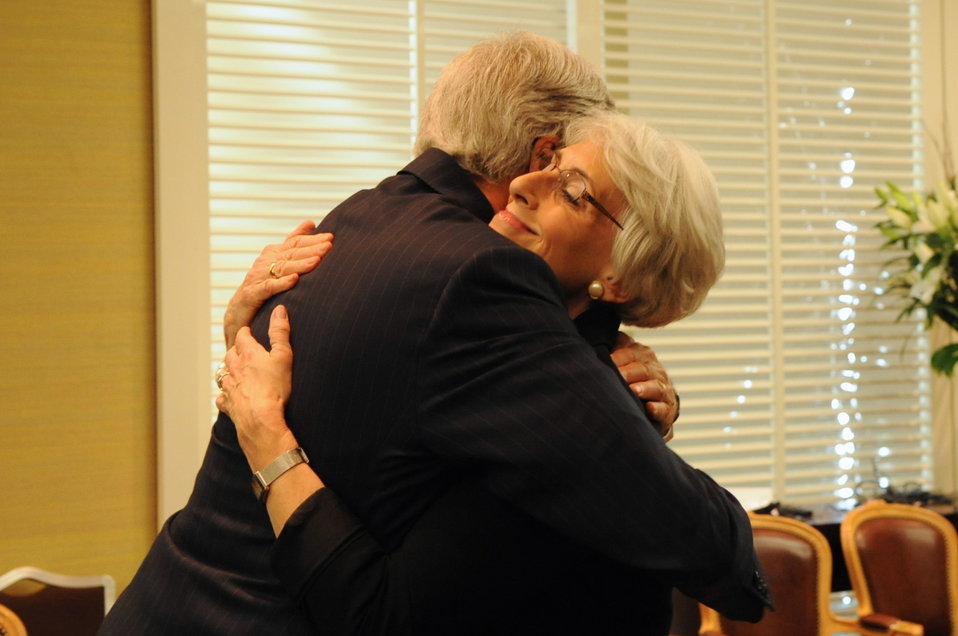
Secretary Kerry Singles Out Undersecretary Sherman for Praise

1:04 p.m., September 14, 2013 - U.S. Secretary of State John Kerry hugs Undersecretary of State for Political Affairs Wendy Sherman after she managed the negotiating team that reached an agreement with the Russian government to eliminate chemical weapons in Syria.